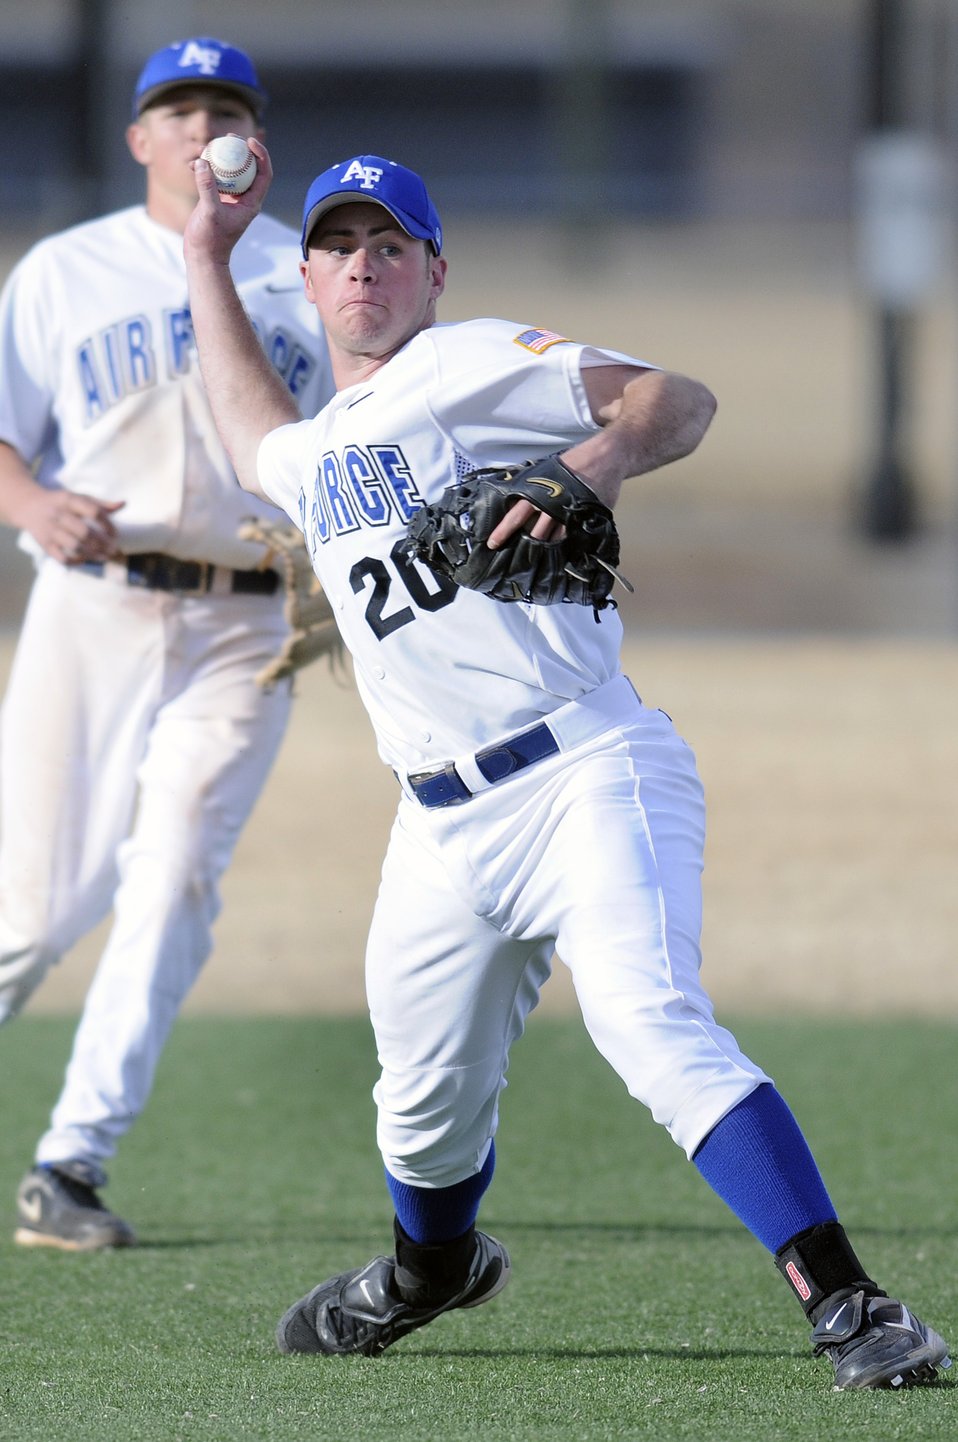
US Air Force Academy, CO

Sophomore 3rd baseman Jon McMahon fields a grounder during the 11-7 win against Colorado Christian at Falcon Field March 17. The win improved the Falcons record to 6-9 on the season. Air Force returns to action with a three-game series at UNLV starting Friday, March 20.